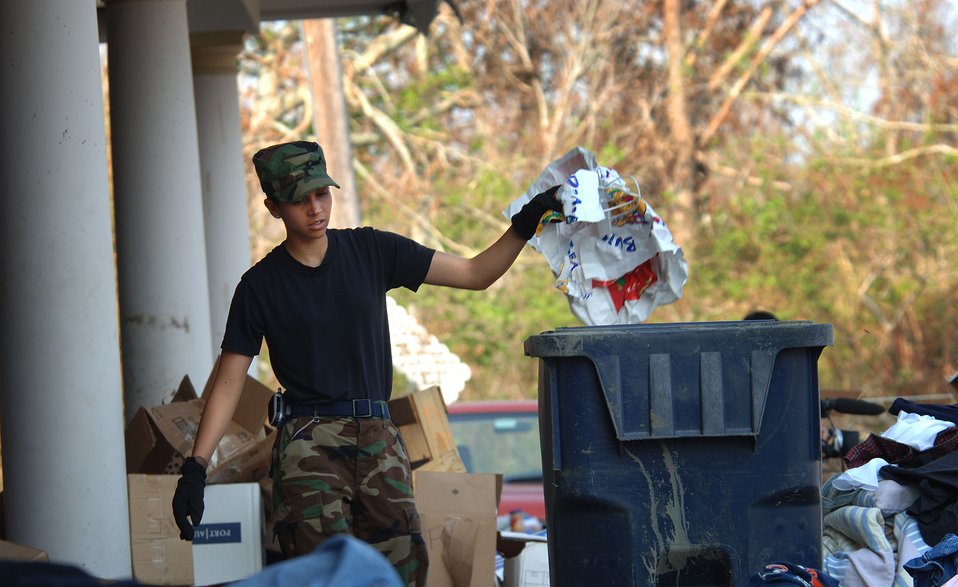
Sorting things out

BILOXI, Miss. -- Senior Airman Aidaliz Lagueux volunteers at a local donation center. She is a personnel specialist from the 305th Mission Support Squadron at McGuire Air Force Base, N.J. She is deployed to nearby Keesler Air Force Base supporting the base's hurricane recovery operation.